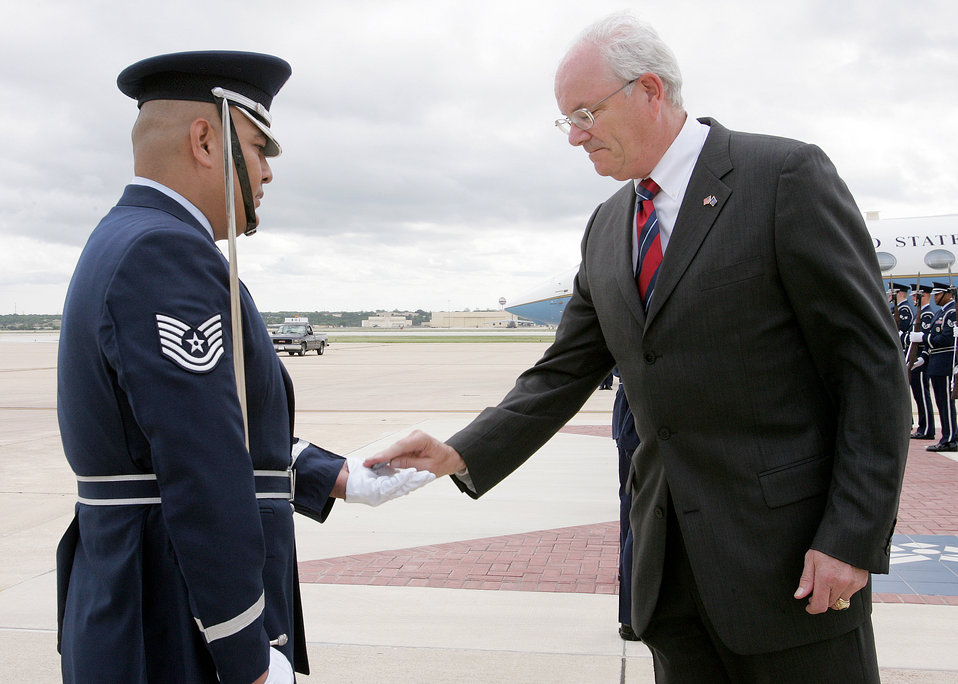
Coined

Secretary of the Air Force Michael W. Wynne hands Tech. Sgt. Herman Ybarra a SECAF coin after his arrival at Lackland Air Force Base, Texas, on Wednesday, May 31, 2006.